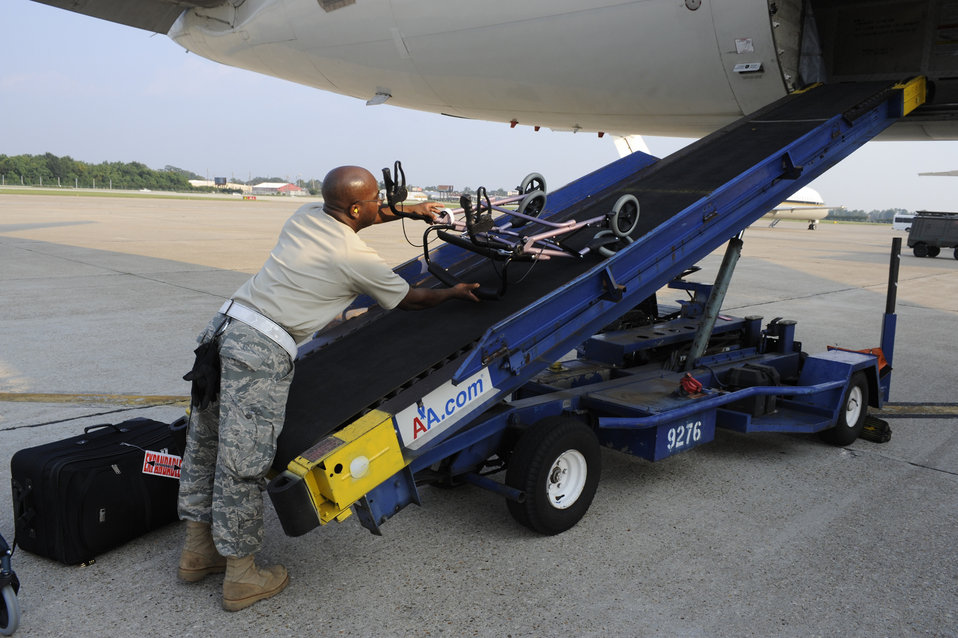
Airmen there as hurricane evacuation begins

Tech. Sgt. Cedric Scott loads luggage at the Louis Armstrong International Airport in New Orleans Aug. 30. Officials with the Federal Emergency Management Agency and the Department of Defense have chartered flights to transport evacuees of Hurricane Gustav to destinations safely outside the path of the hurricane. Sergeant Scott is from the 615th Contingency Response Wing at Travis Air Force Base, Calif.